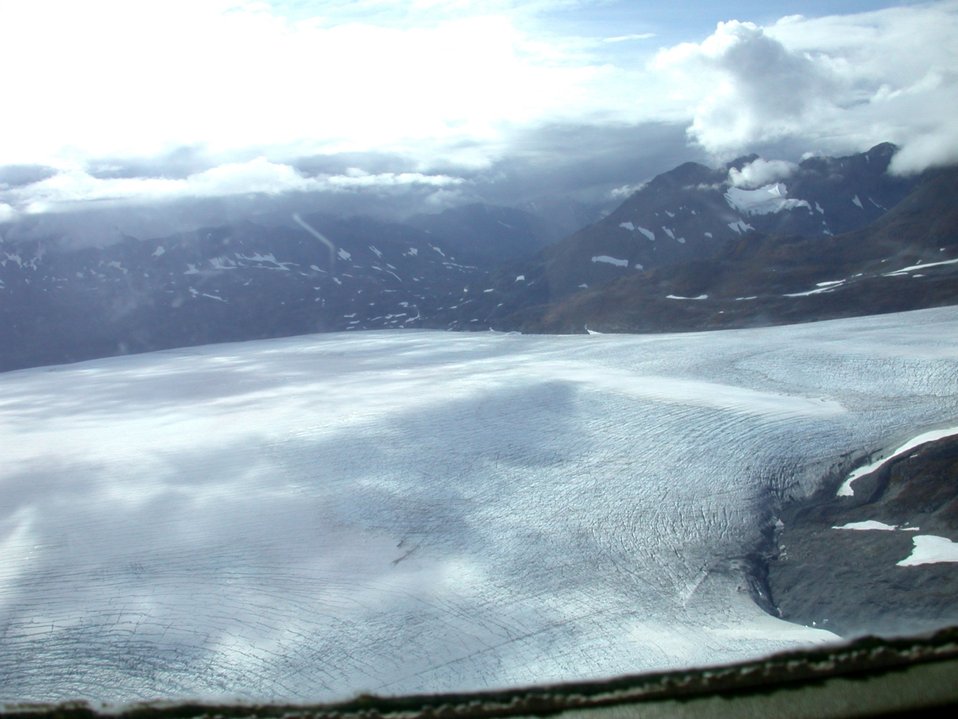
Float plane sightseeing along the Richardson Highway. Note cracks in glacier.